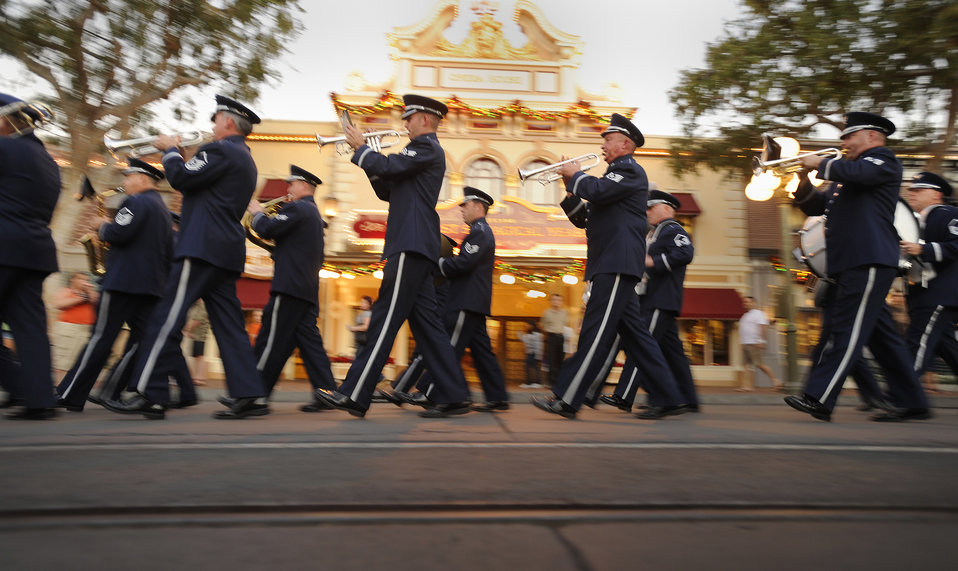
Air Force Week Los Angeles

Marching band members of the U.S. Air Force Band of the Golden West perform down Main Street U.S.A. at the Disneyland Resort in Anaheim, Calif., Nov. 17. The band is performing during Air Force Week Los Angeles, an event designed to educate the local population about the Air Force's capabilities and missions through various activities and exhibitions in the Los Angeles area.